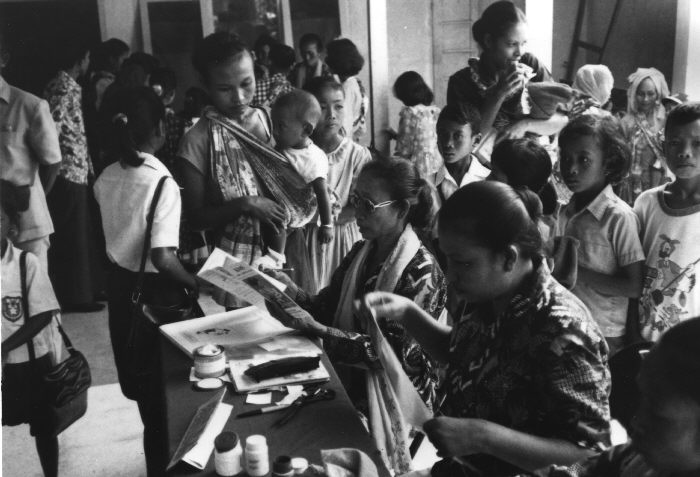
Refugees of Southeast Asia